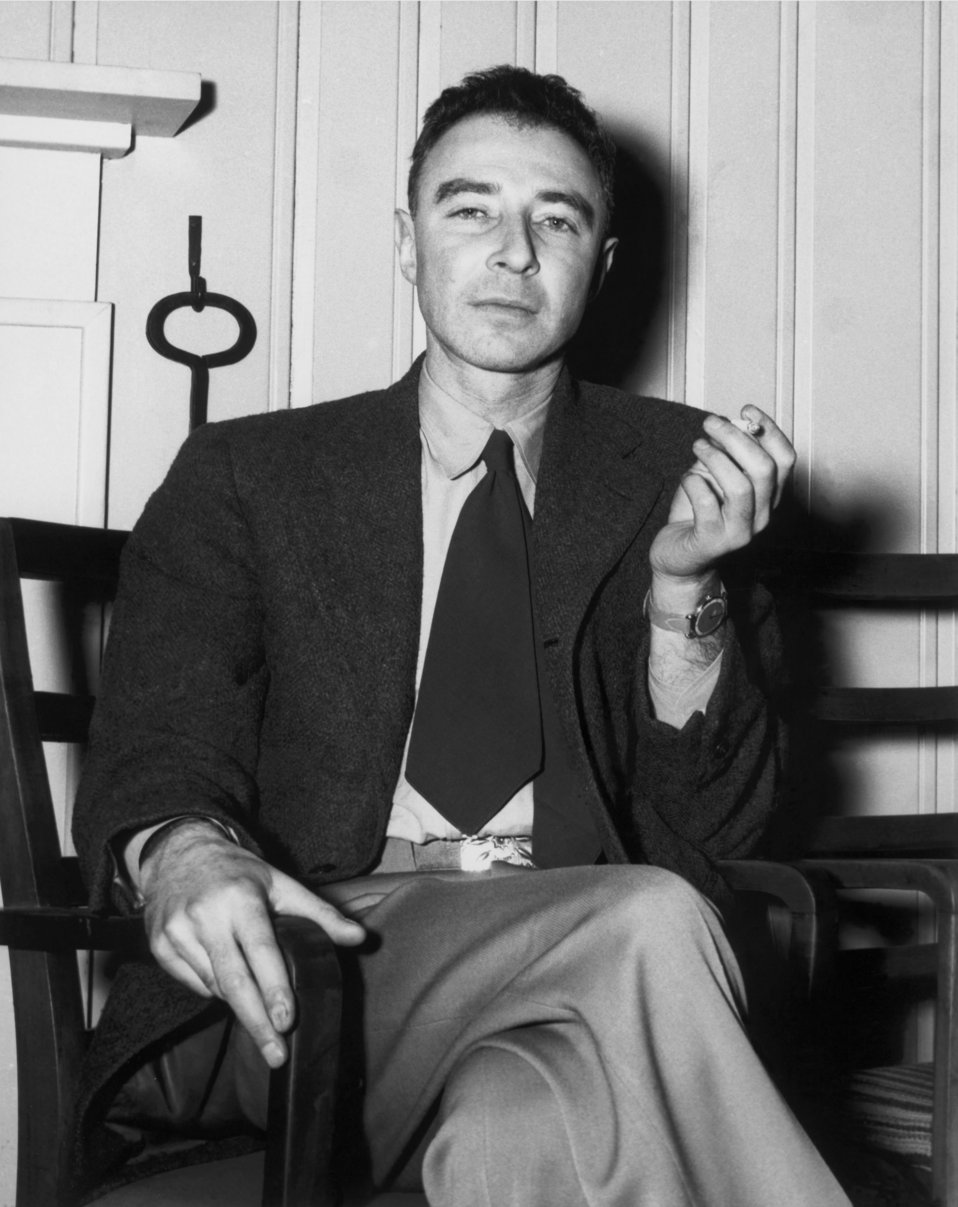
J. Robert Oppenheimer Oak Ridge

1451 DOE photo by Ed Westcott
J. Robert Oppenheimer Oak Ridge Tennessee 2-14-1946